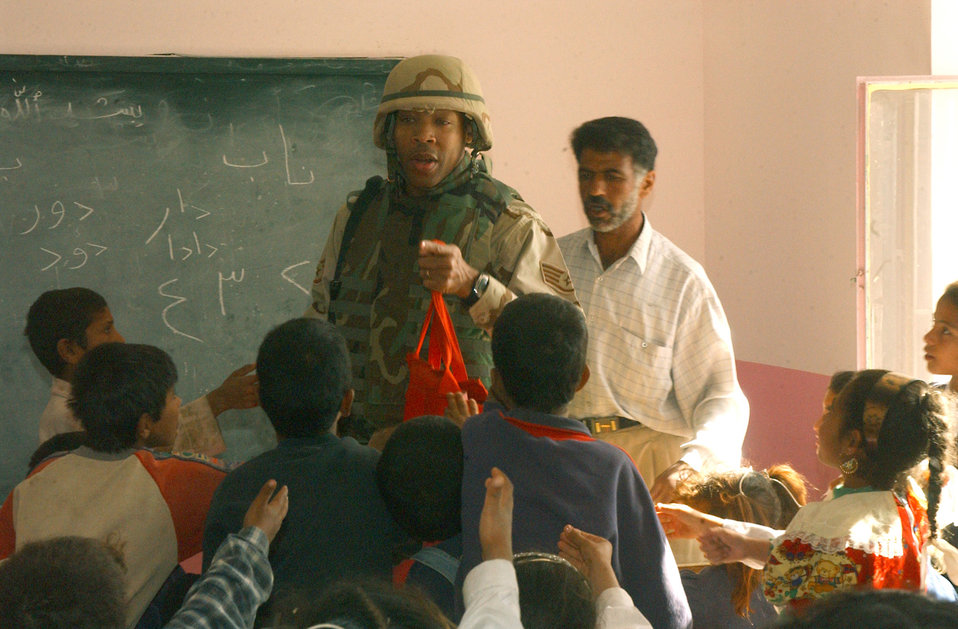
Airmen take part in Operation Pencil Box

NEAR BALAD AIR BASE, Iraq -- Staff Sgt. Jerome Whitted talks with students as he hands out supplies in an elementary school classroom here Oct. 24. The visit was part of Operation Pencil Box, a humanitarian project to deliver school supplies to Iraqi children. Sergeant Whitted is assigned to the 732nd Expeditionary Mission Support Group at the air base.